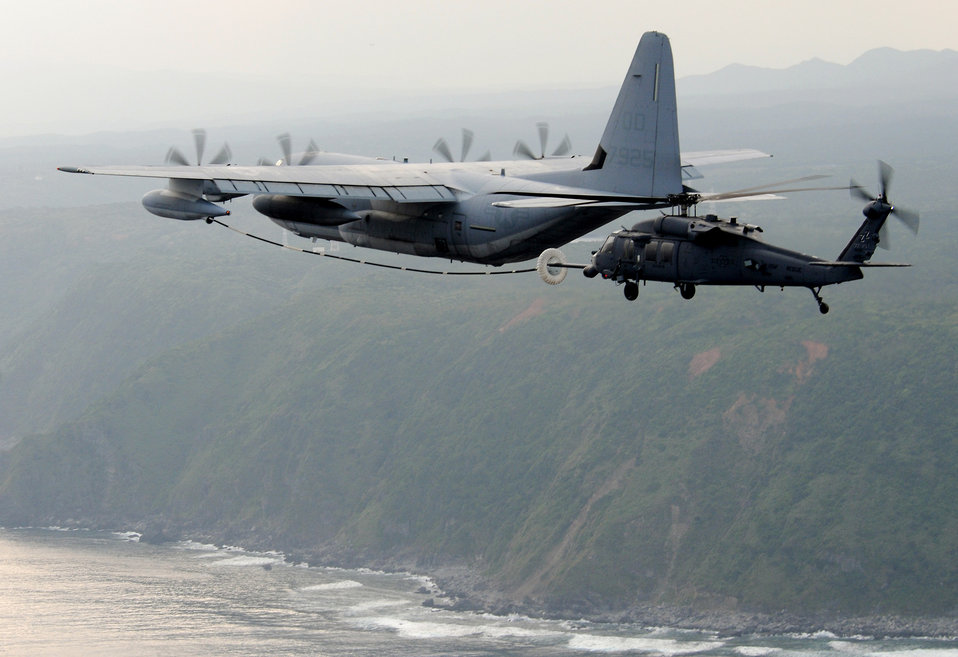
33rd Rescue Squadron wins 2009 Air Force's Verne Orr Award

An HH60G-Pave Hawk from the 33rd Rescue Squadron refuels during a three-day intensive air refueling course March 24 at Kadena Air Base, Japan.